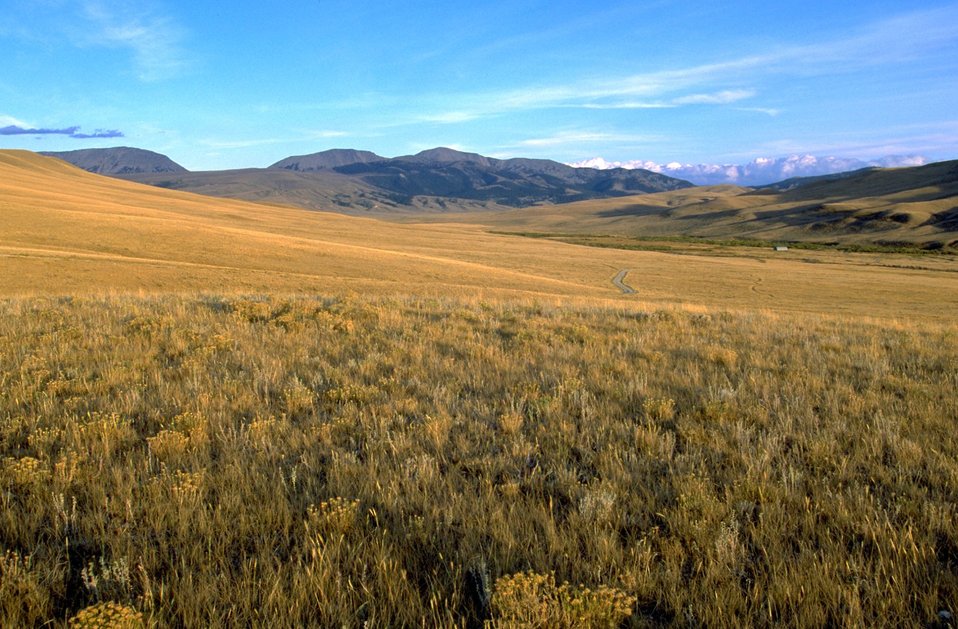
Grassy slope leading down to the East Fork Blacktail Creek